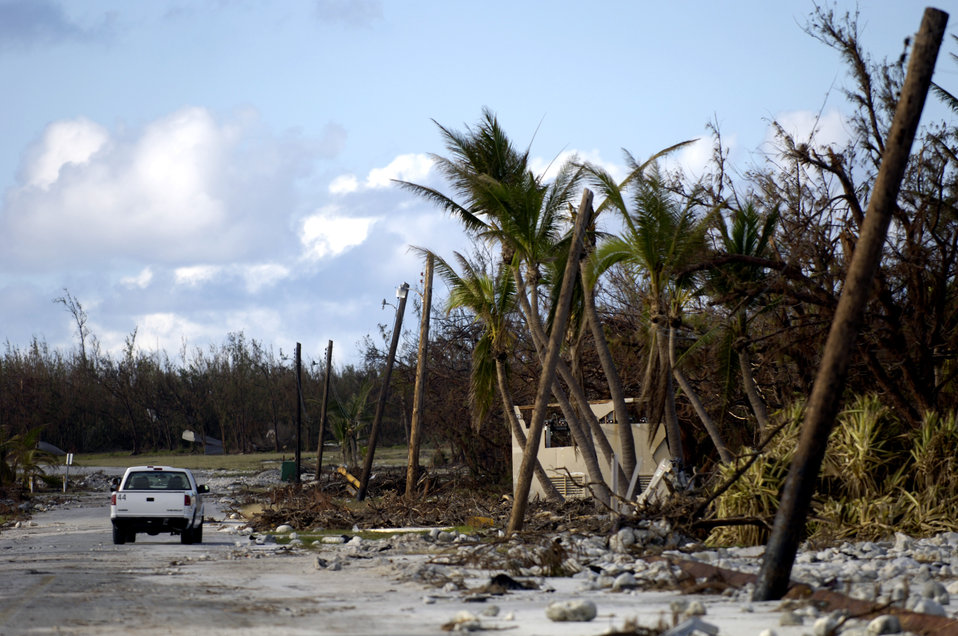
Hickam team begins Wake Island assessment

A truck drives past the devastation left by Super Typhoon Ioke on Wake Island Sept. 12. A C-17 Globemaster III from the 535th Airlift Squadron at Hickam Air Force Base, Hawaii, brought a 53-person team to assess damage left by the typhoon after it struck the island Aug. 31.